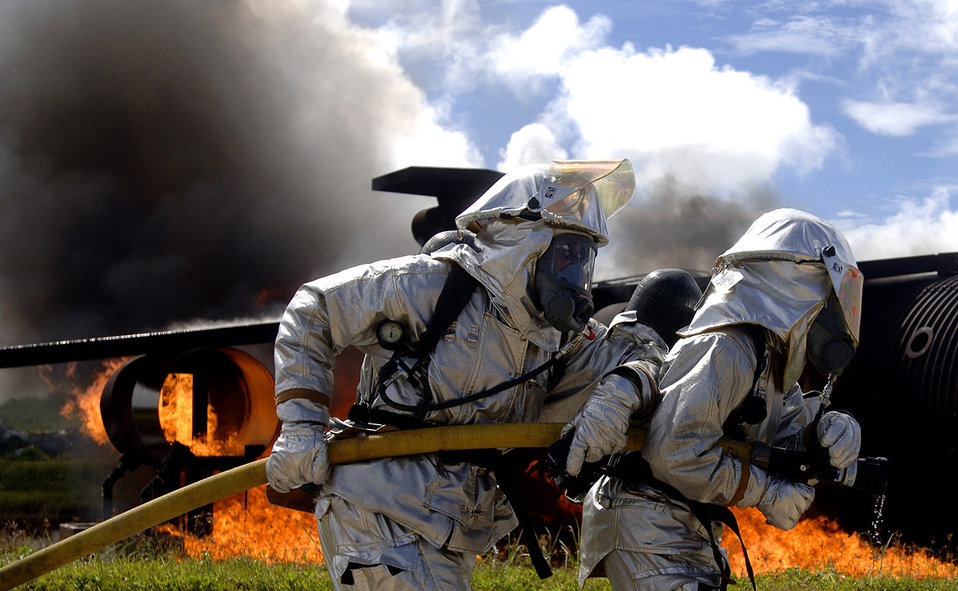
Beverly Palm

ANDERSEN AIR FORCE BASE, Guam -- Firefighters work to put out a fire as part of a simulated aircraft crash during exercise Beverly Palm 05-07 here Oct. 5. The routine exercise is conducted here a few times a year to sharpen the mobility and wartime capabilities of participating servicemembers.